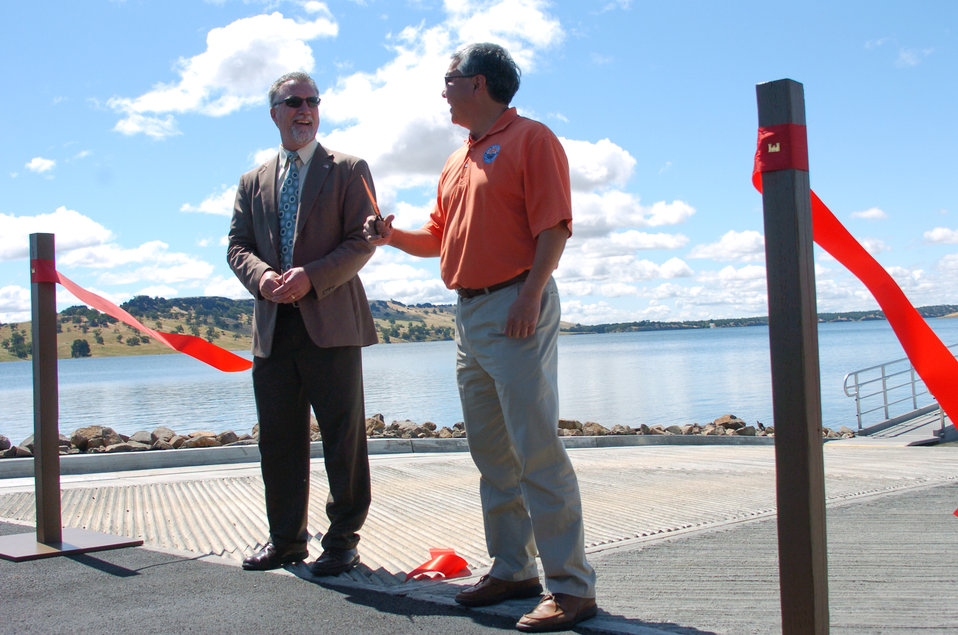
New boat ramp opens at Black Butte Lake

U.S. Army Corps of Engineers Sacramento District construction operations division chief Mike Mahoney (left) and California Department of Boating and Waterways boating facilities division chief Steve Watanabe officially open a new boat ramp at Black Butte Lake, Calif., in a ribbon-cutting ceremony May 18, 2011. An expansion project funded by a grant from DBW doubled the size of the existing ramp and added new parking, restrooms and solar-powered lighting.